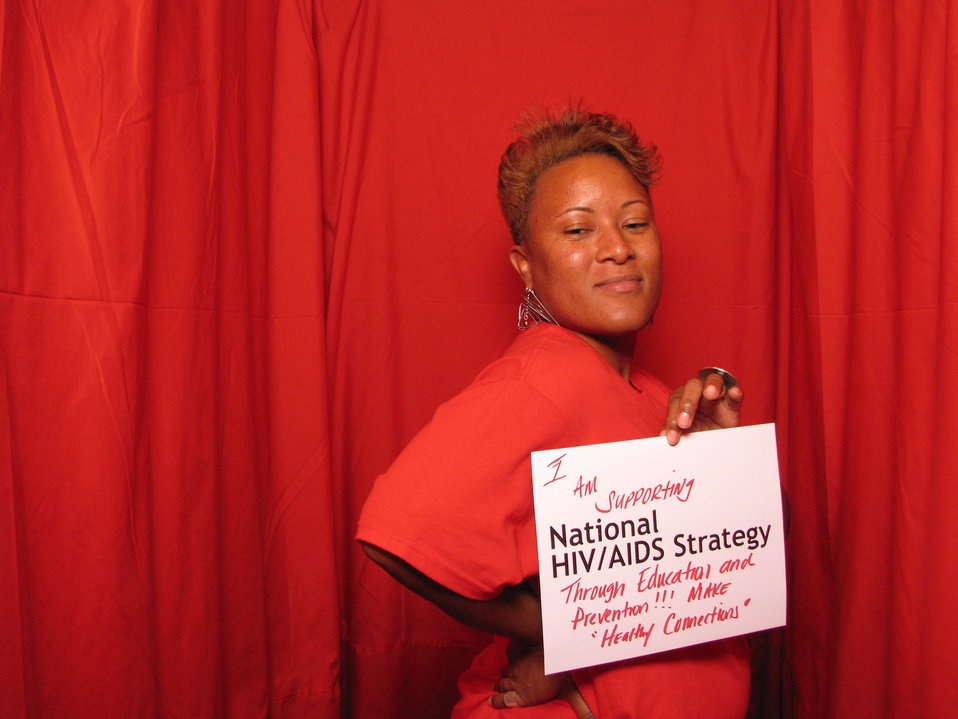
I am Supporting the National HIV/AIDS Strategy Through Education and Prevention!!! Make 'Healthy Connections.'

From the AIDS.gov photo booth at the U.S. Conference on AIDS, September 2010 (Orlando, FL).